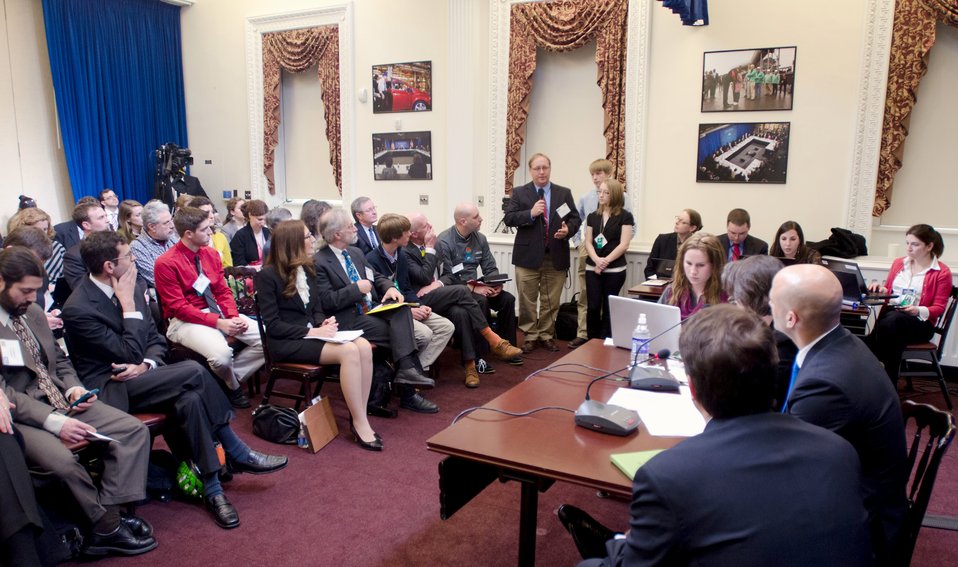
National Farm To School Network Executive Board Member David W. Marvel, Jr. (with microphone), son David Marvel, III. (right), and daughter Bethany Marvel (right), from West Virginia, were at the White House, in Washington, D.C., on Monday, March 5, 2012. David W. Marvel, Jr., spoke about the farm to school program in his community and has been active in the Farm to Cafeteria conferences and the National Farm to School efforts. This event held a virtual conversation continuing the National Conversation on Local and Regional Food projects and how they offer economic opportunities to local farmers, ranchers and food entrepreneurs.